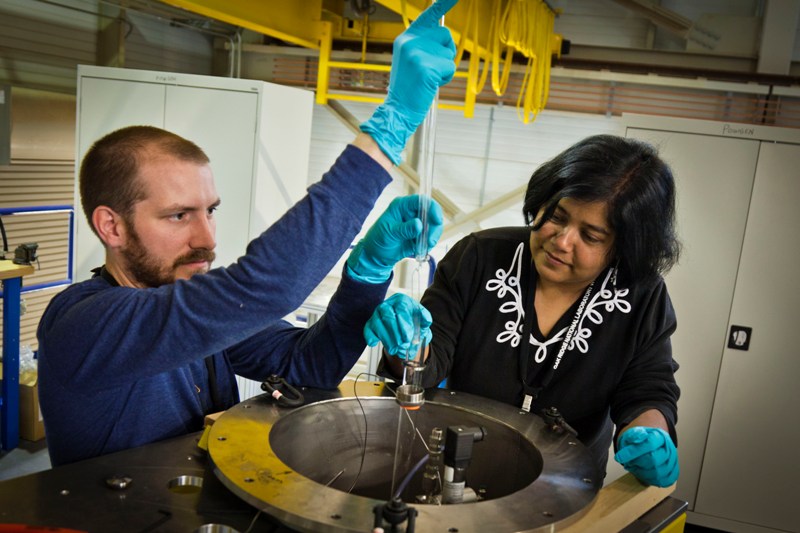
Ashfia Huq is a Lead Scientist of the Powgen beamline in the Chemical and Engineering Materials Division at the Spallation Neutron Source at Oak Ridge National Laboratory. Ashfia was born in Bangladesh and after finishing high school in Dhaka, she attended Mount Holyoke College in MA for her undergraduate degree. Ashfia double majored in Physics and Computer Science, then headed to State University of New York at Stony Brook and joined a theory group working on modeling. Following her second year of grad school, she was introduced to the Department of Energy through Professor Peter Stephens, and joined his group for the X-ray beamline at NSLS. Ashfia moved to Argonne National Lab’s Intense Pulsed Neutron Source in 2003 working as a post doc at the General Purpose Powder Diffraction (GPPD) Beamline. In 2006, she was hired as an instrument scientist for the powder diffraction beamline (Powgen) at the Spallation Neutron Source at Oak Ridge National Laboratory, and currently serves as their lead scientist.

Read her full story at energy.gov/diversity/articles/women-energy-ashfia-huq